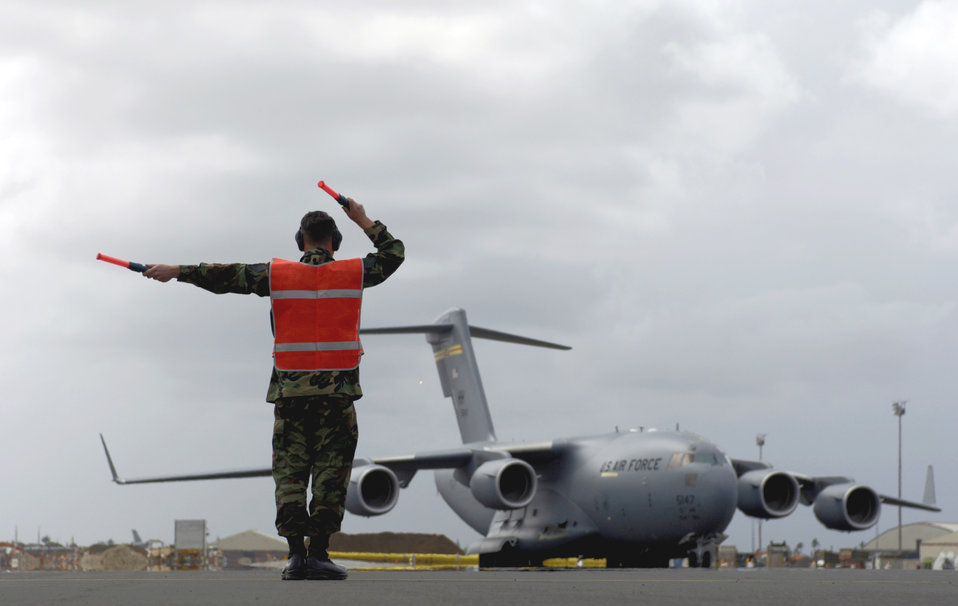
Maintenance troops

Staff Sgt. Wesley Clark marshals a C-17 Globemaster III into its parking spot at Hickam Air Force Base, Hawaii, Tuesday, Feb. 28, 2006. Sergeant Clark is a crew chief with the 15th Maintenance Group, which is a combined active duty and Air National Guard maintenance group.